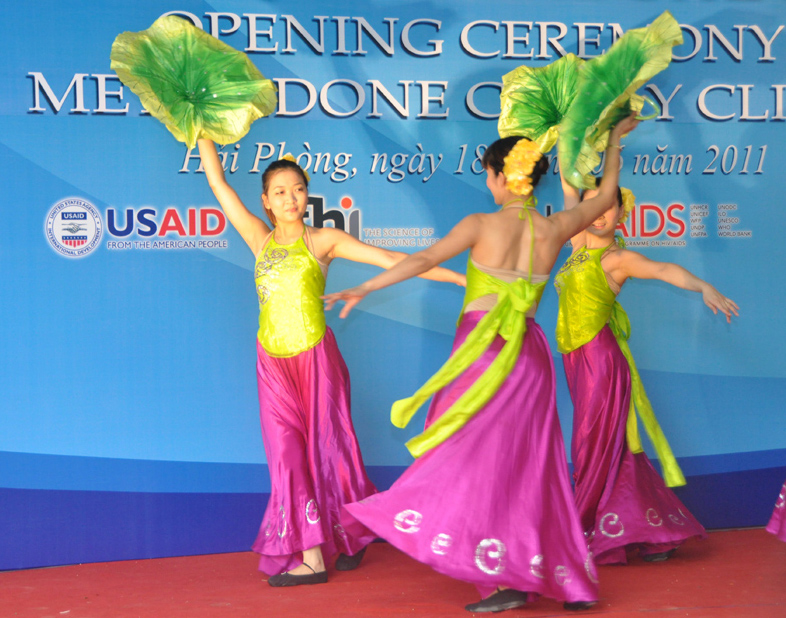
Co-pay Methadone Treatment Center Opens in Hai Phong on June 18, 2011